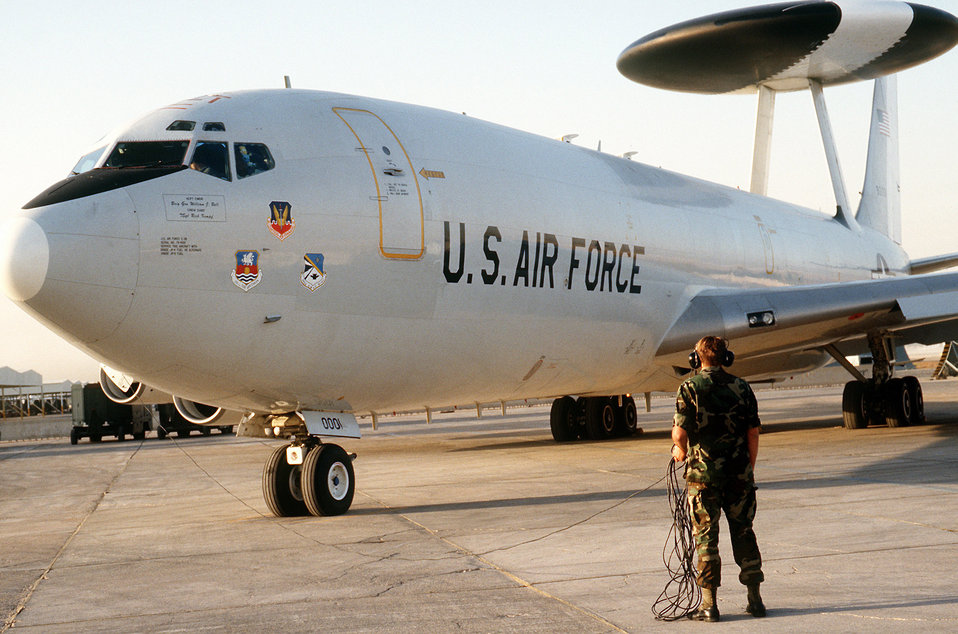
E-3 Sentry

1990's -- Sgt. Harland W. McCallum, assistant crew chief of the 963rd Aircraft Maintenance Unit, readies an E-3 Sentry Airborne Warning and Control System aircraft for takeoff during Operation Desert Shield.